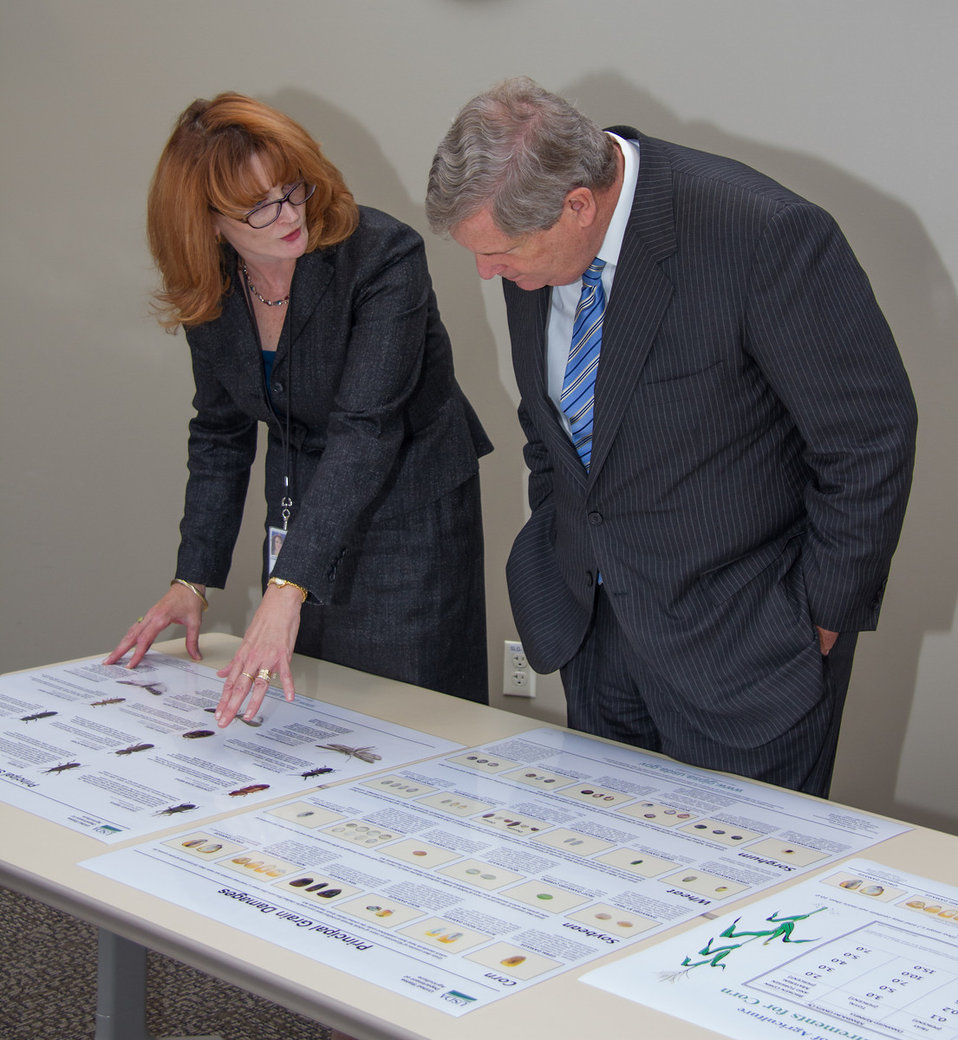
Mary Alonzo, Director of Grain Inspection, Packers and Stockyards Administration (GIPSA),Technology and Science Division, shows Agriculture Secretary Tom Vilsak some of the training aids that are produced by GIPSA's Digital Media Group to achieve consistency in official inspection and enhance domestic and export customers' confidence in U.S. grain quality in Kansas City, MO, on Wednesday, Oct. 23, 2013.